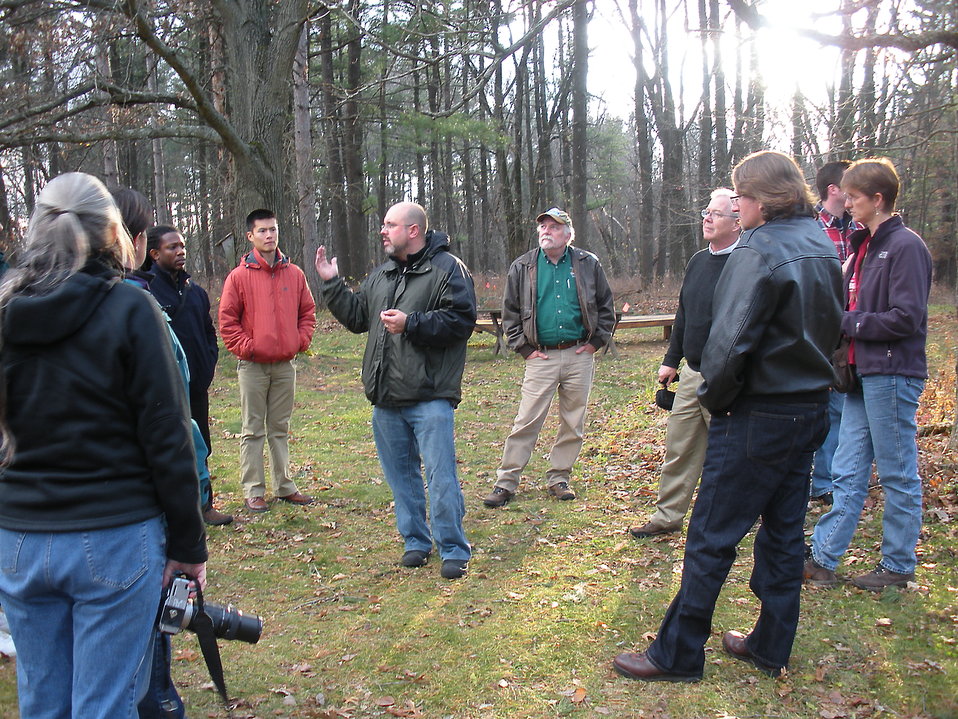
Tour guide and the group